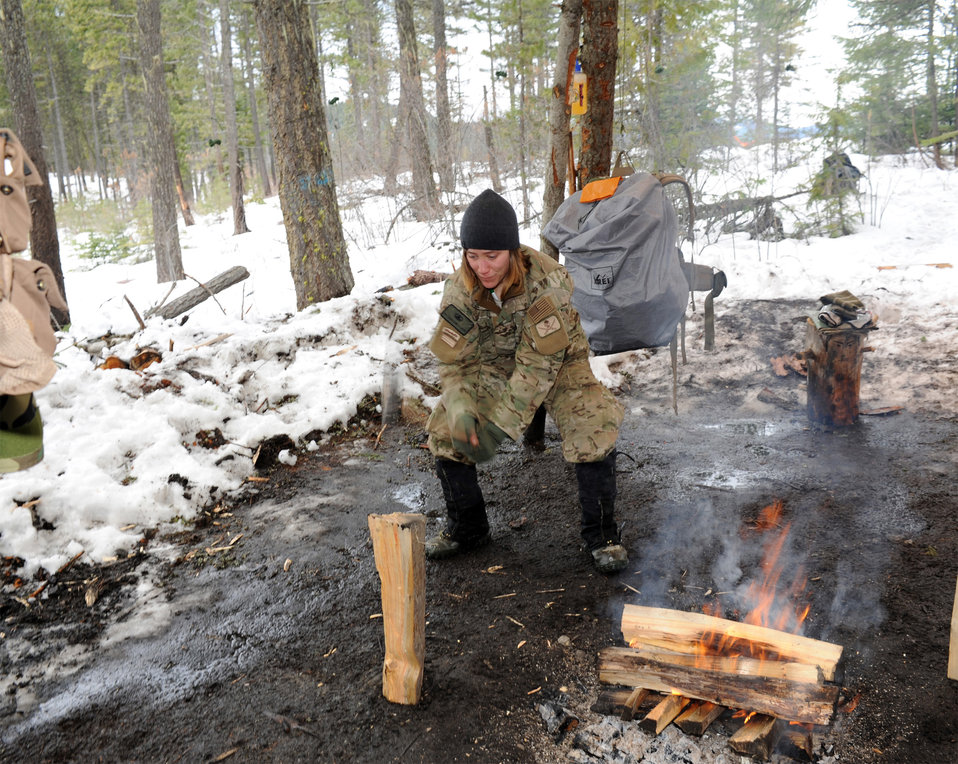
Not just for the guys

Senior Airman Charlene Plante, a 22nd Training Squadron survival, evasion, resistance and escape instructor at Fairchild Air Force Base, Wash., chops wood for a fire for her students March 13, 2011, in Colville National Forest, Wash. The fire will ensure her students have the capability of drying their wet clothes and provide much-needed warmth. Airman Plante will use this time to check her students for frostbite as a safety precaution.